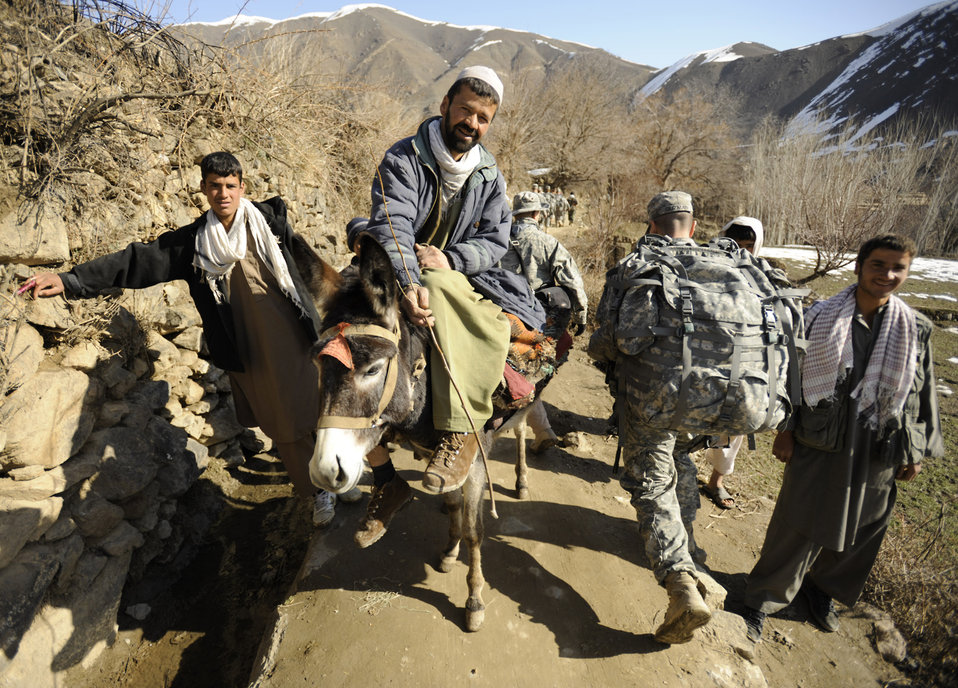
Panjshir PRT visits Afghan villagers

Army Sgt. Ramon Guzman walks past villagers during a March 5 site visit in Afghanistan's Panjshir Valley. Sergeant Guzman is a Panjshir Provincial Reconstruction Team civil affairs member.